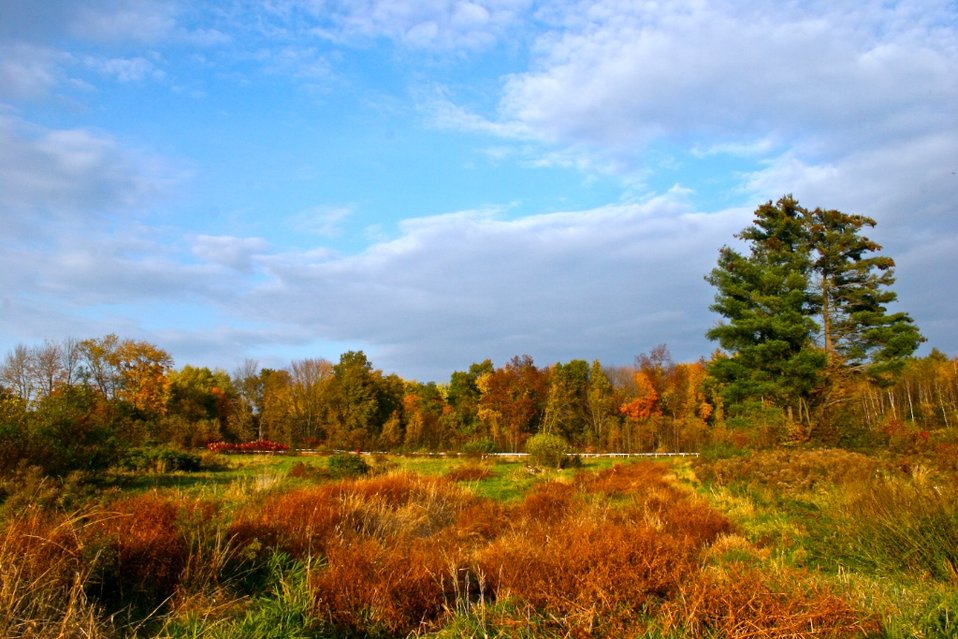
Photo of the Week - Fall Colors at Silvio O. Conte National Wildlife Refuge, MA

Photo of the Week - 09/23/10 - Happy first day of fall!

A meadow within the Fort River Division of the Silvio O. Conte National Fish and Wildlife Refuge in Hadley, MA.